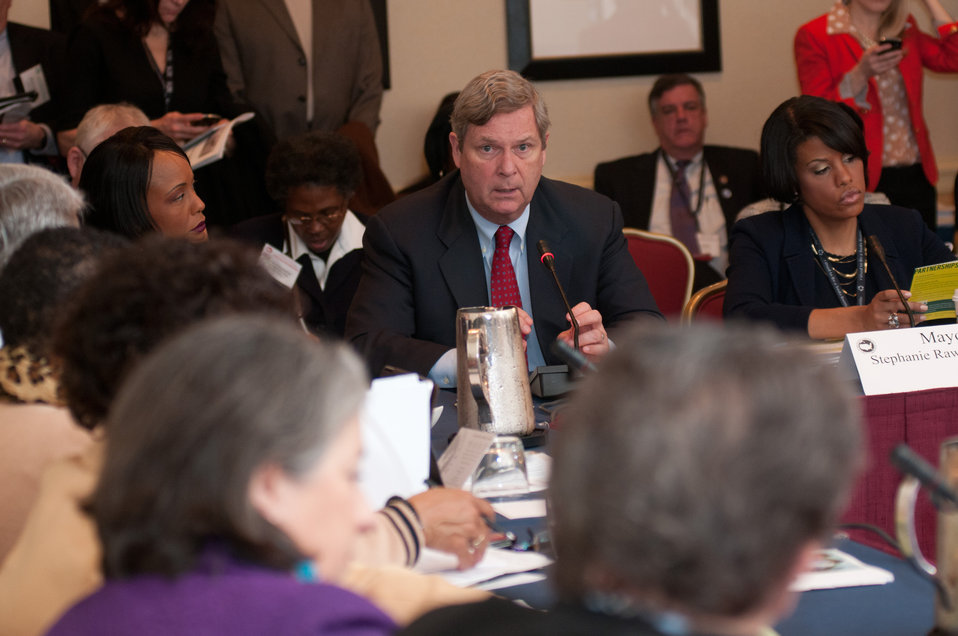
Agriculture Secretary Thomas Vilsack, (at end table with red tie) listens and responds to questions from mayors, during the United States Conference of Mayors 81st Winter Meeting, Food Policy session in Washington D.C., on Thursday, Jan 17, 2013. Some of his responses highlighted the Supplemental Nutrition Assistance Program (SNAP), Know your Farmer Know your Food (www.usda.gov/wps/portal/usda/usdahome?navid=KYF COMPASS) and many other ways that rural America makes a difference.